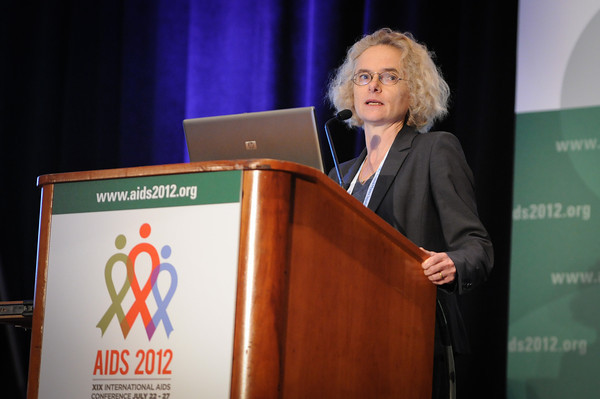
Dr. Volkow Speaks at International AIDS Conference - 4